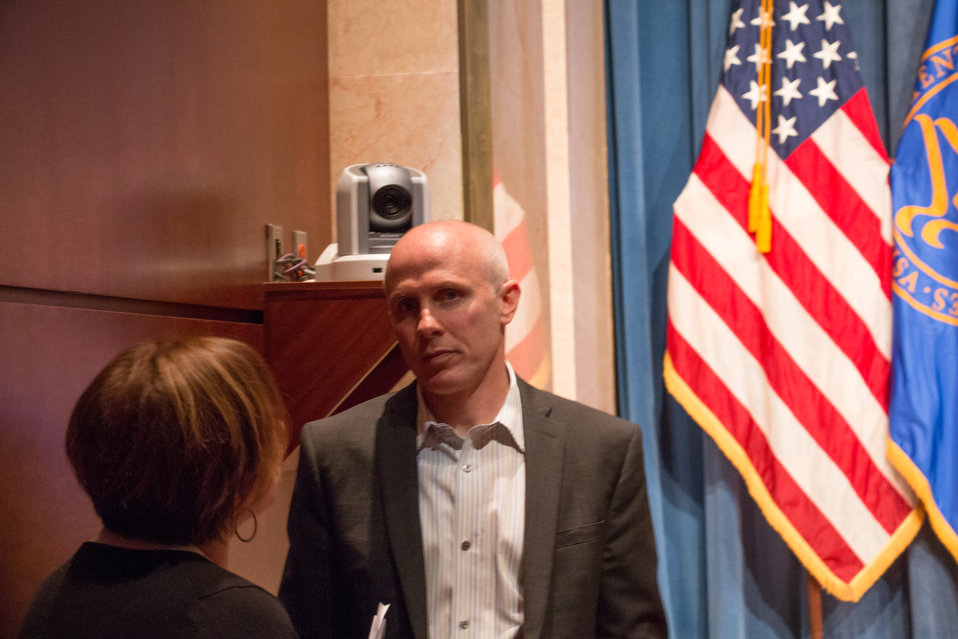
VHAP Launch (413 of 511)